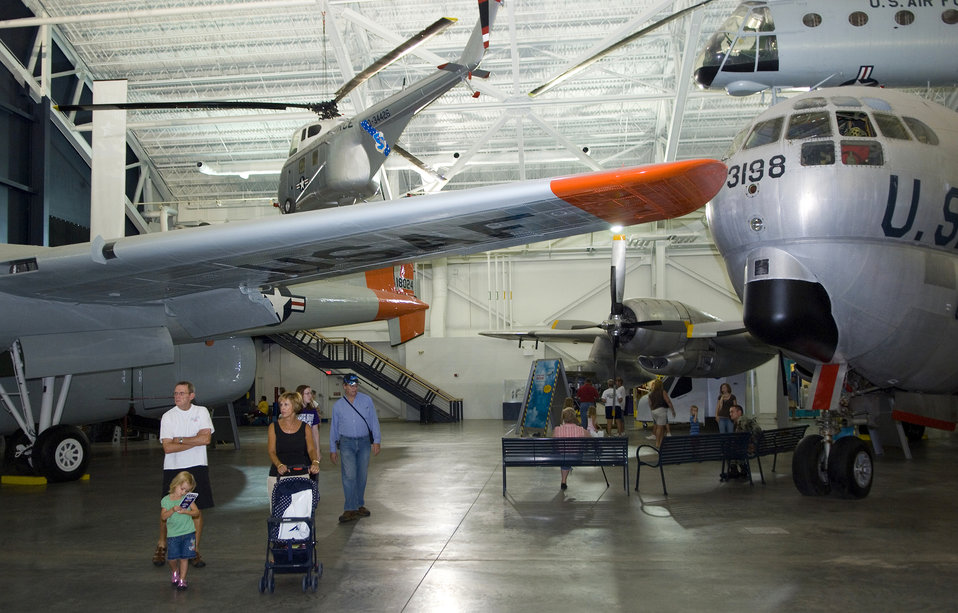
Air Force Week mixes past, present, future at museum

Strategic Air and Space Museum officials hosted an entire day dedicated to the legacy of airpower providing special Air Force demonstrations and displays during Air Force Week in the Heartland Aug. 13 in Ashland, Neb. The museum is a 300,000-square-foot facility promoting education in aviation and aerospace topics.